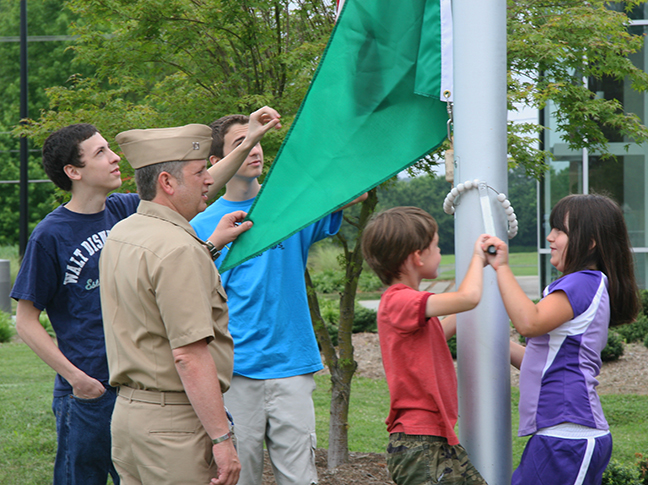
June 22 - Raising the air quality index flag

LT John Masters, U.S. Public Health Service officer, gets help raising the air quality index flag, which is part of EPA’s School Flag Program. The color of the flag represents the air quality for the day.
villagegreen.epa.gov, www.airnow.gov